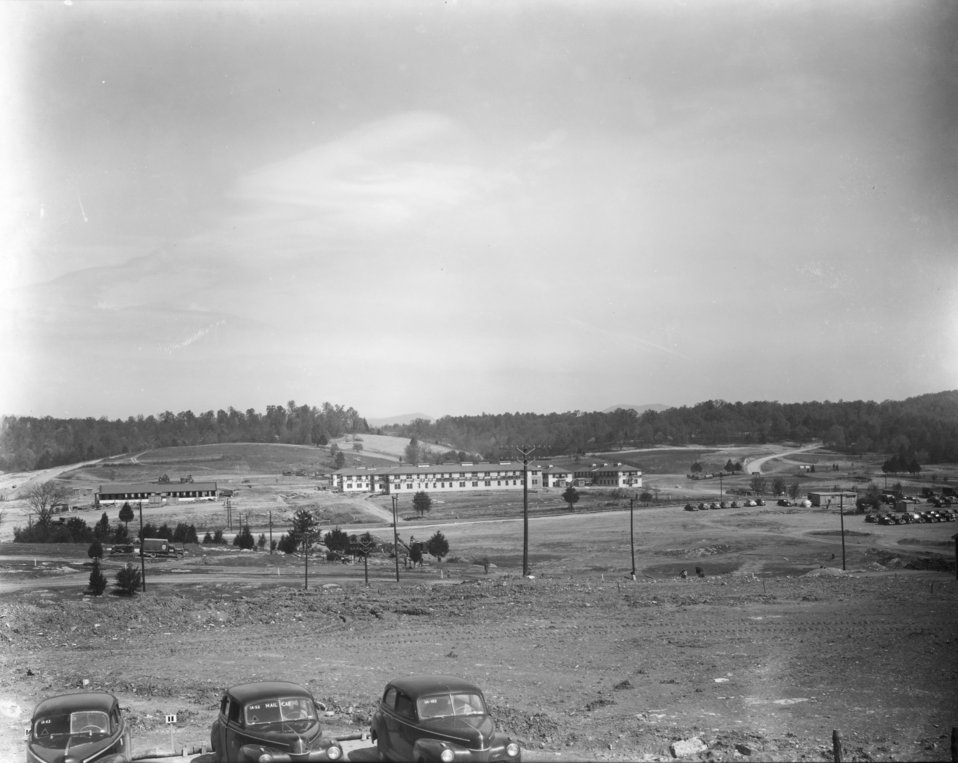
Construction activity at Oak Ridge